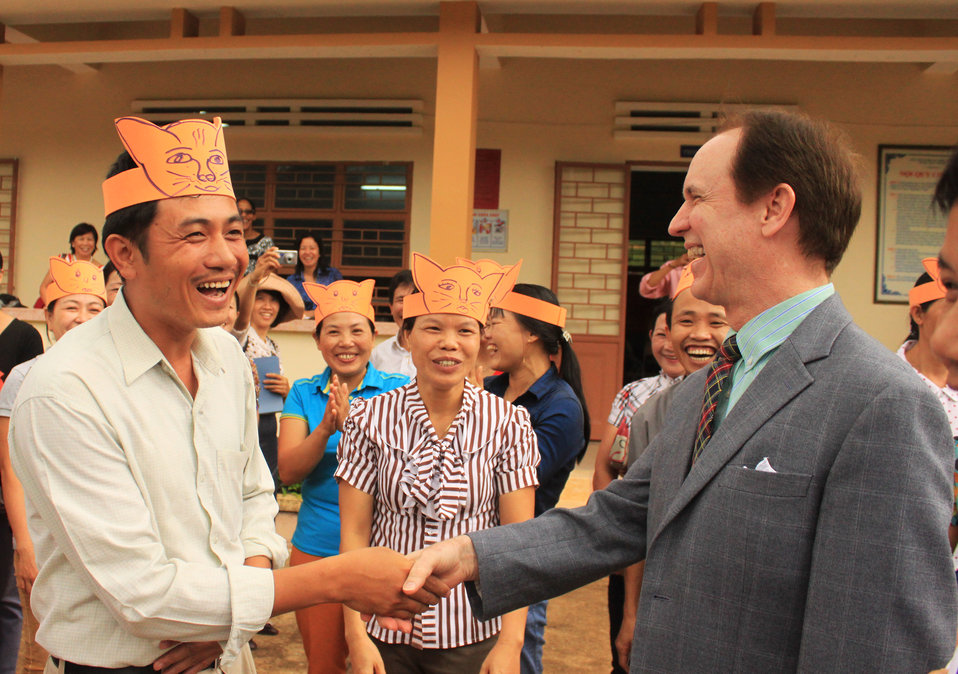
USAID Mission Director Francis Donovan joins local teachers as they practice what they learned from USAID-funded intensive training courses